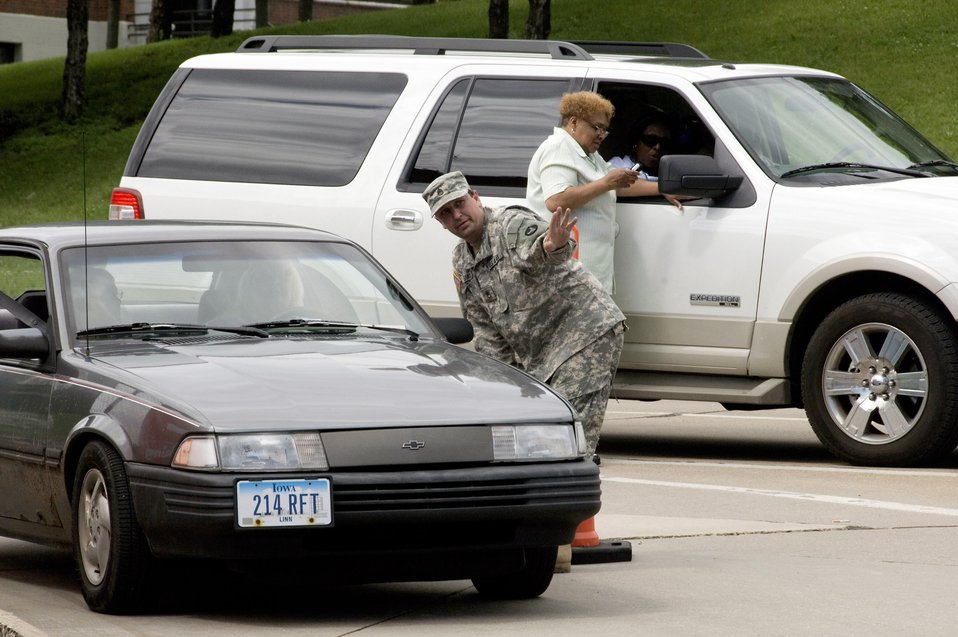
Air National Guard shores up as flood recedes

Staff Sgt. David Smith gives detour directions to a resident trying to return home after massive flooding in Cedar Rapids, Iowa. Sergeant Smith is a Guardsman with the Headquarters and Headquarters Company 2 Brigade Combat Team. He is from Boone, Iowa, and was activated to help with recovery efforts in Cedar Rapids, Iowa.